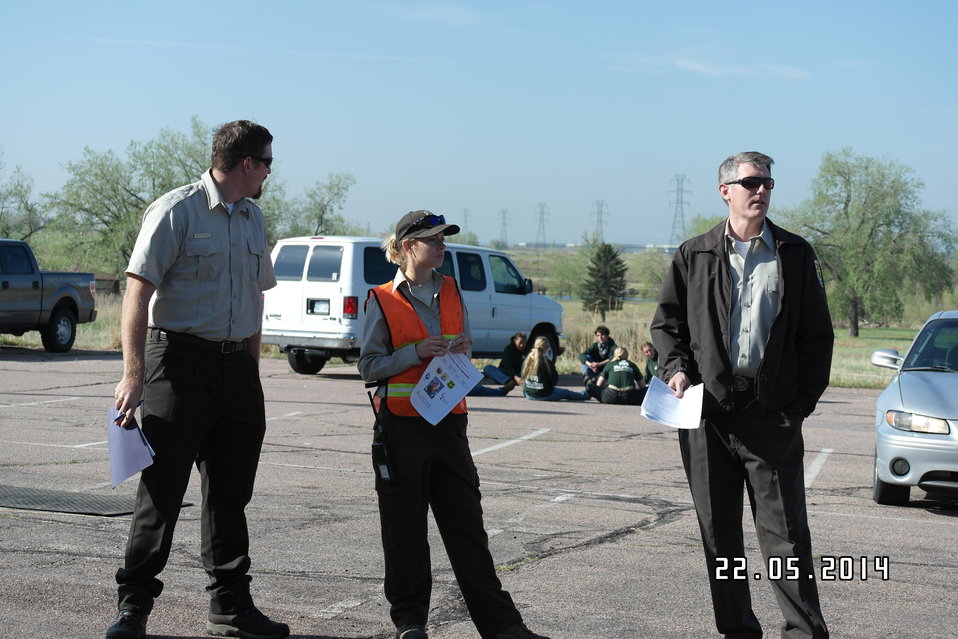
Safety Briefing with RMA